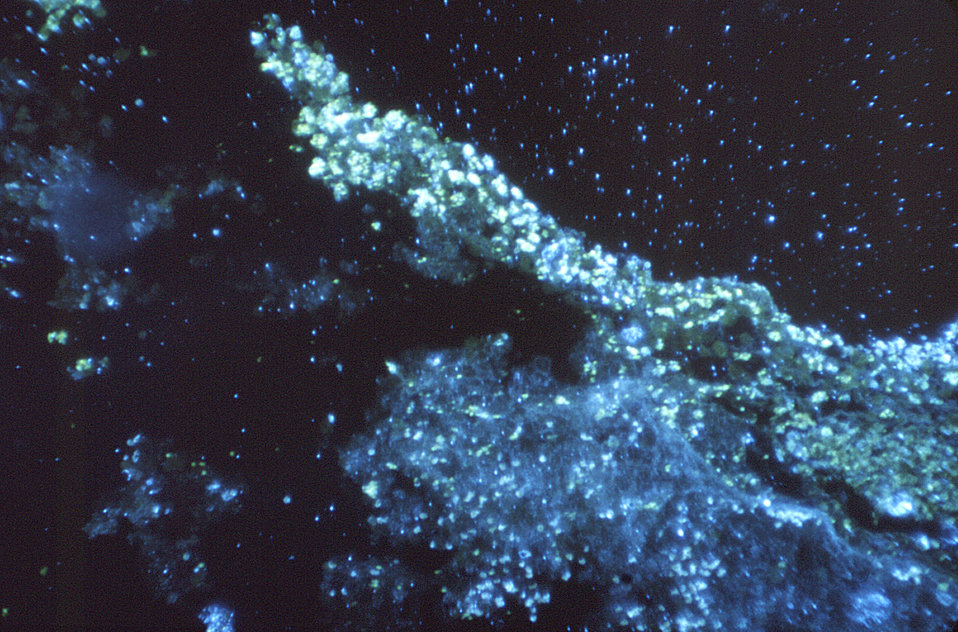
Magnified 125X, "digested", then stained using a fluorescent antibody-staining technique, this photomicrograph reveals the presence of Histoplasma capsulatum antigens in this human lung tissue specimen.